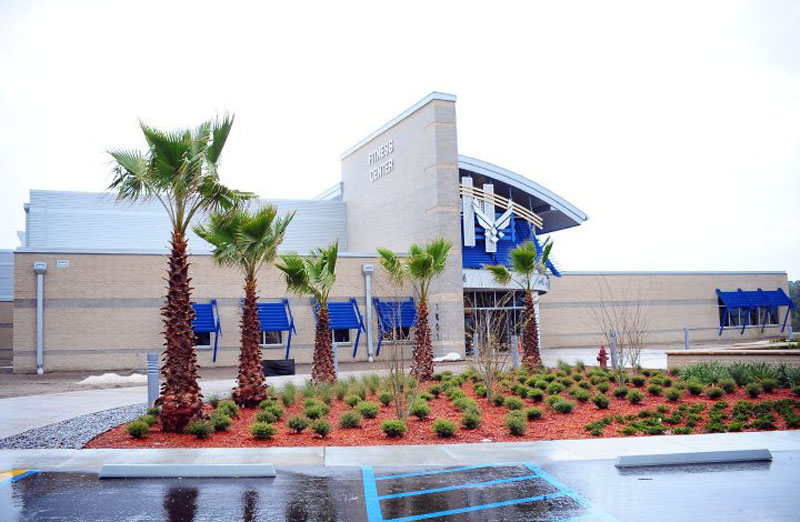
Green building

The fitness center at Tyndall Air Force Base, Fla., is the Defense Department's first building to be awarded the U.S. Green Building Council's Leadership in Energy and Environmental Design Platinum level.